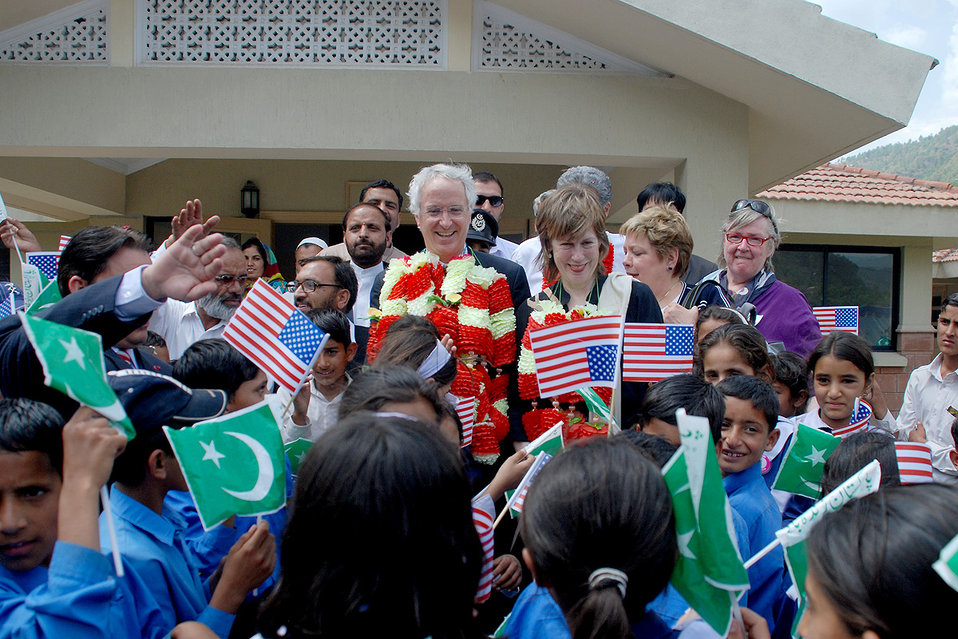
Envoy Highlights U.S. Development

Raja Muhammad Roshan Johar, District Education Officer, Tasneem Kiani, Principal of the Girls College Arja and Sajawal Khan, Headmaster of the Boys High School thanked the Ambassador and American people for constructing high-standard and earthquake resistant school buildings in their area. They also appreciated the program approach of involving local community in the construction projects.